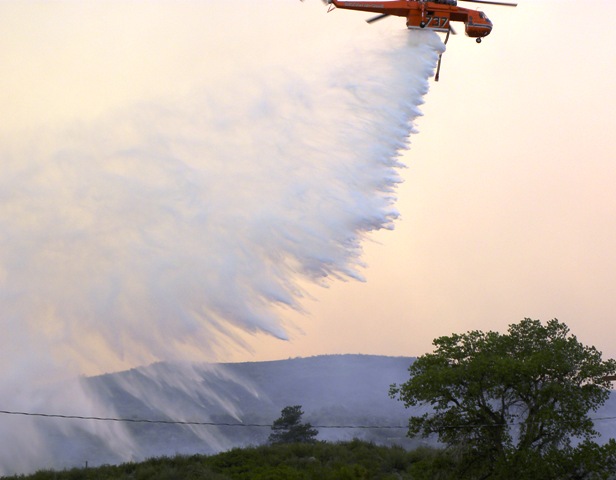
Fire retardant is dropped from a helicopter on the High Park Wildfire on the Arapaho and Roosevelt National Forests and Pawnee National Grassland, Colorado on Thursday, June 10, 2012. The High Park Wildfire located approximately 15 miles west of Fort Collins, CO has consumed over 65,738 acres of forest and grassland with approximately 189 homes destroyed. Over 1,773 personnel from the U.S. Forest Service (FS), state and local resources are fighting the wildfire and have achieved 55% containment as of June 20, 2012. The High Park Wildfire began on June 9. 2012 because of a lightening strike on private land.